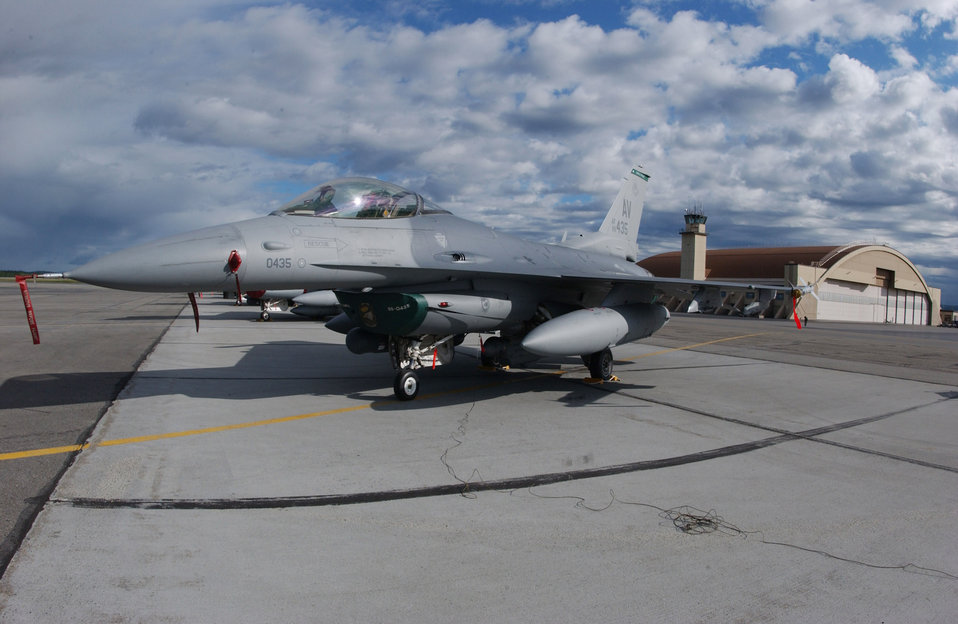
Joint forces combine for Red Flag-Alaska exercise

An F-16 Fighting Falcon from Aviano Air Base, Italy, sits on the tarmac at Eielson Air Force Base, Alaska, May 31 for Red Flag-Alaska 07-2. The Pacific Air Forces-directed field training exercise allows U.S. and coalition forces to fly under simulated air combat conditions. It is conducted on the Pacific Alaska Range Complex with air operations flown out of Eielson and Elmendorf AFB. The aircraft is from the 555th Fighter Squadron.